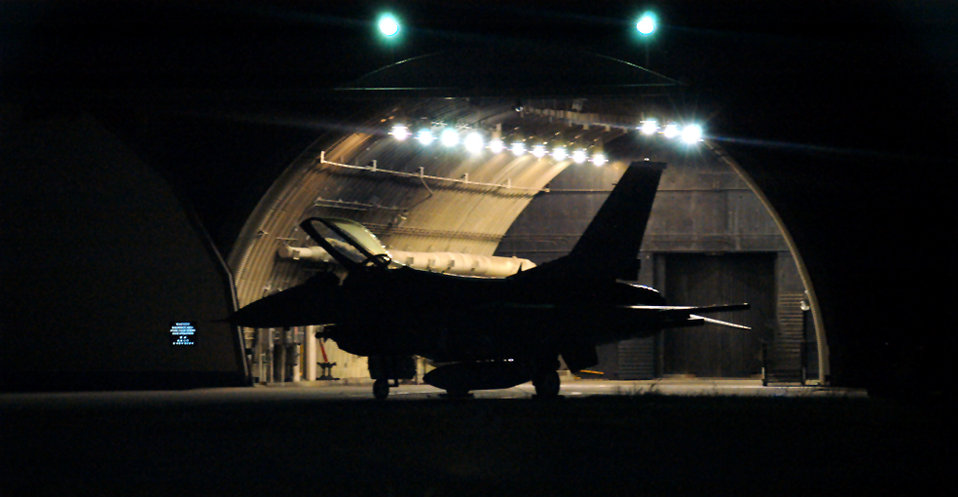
Night missions

KUNSAN AIR BASE, South Korea -- An F-16 Fighting Falcon is silhouetted in front of the its hangar by work lights. Pilots here started flying night sorties to familiarize themselves with the challenges of flying in the dark.